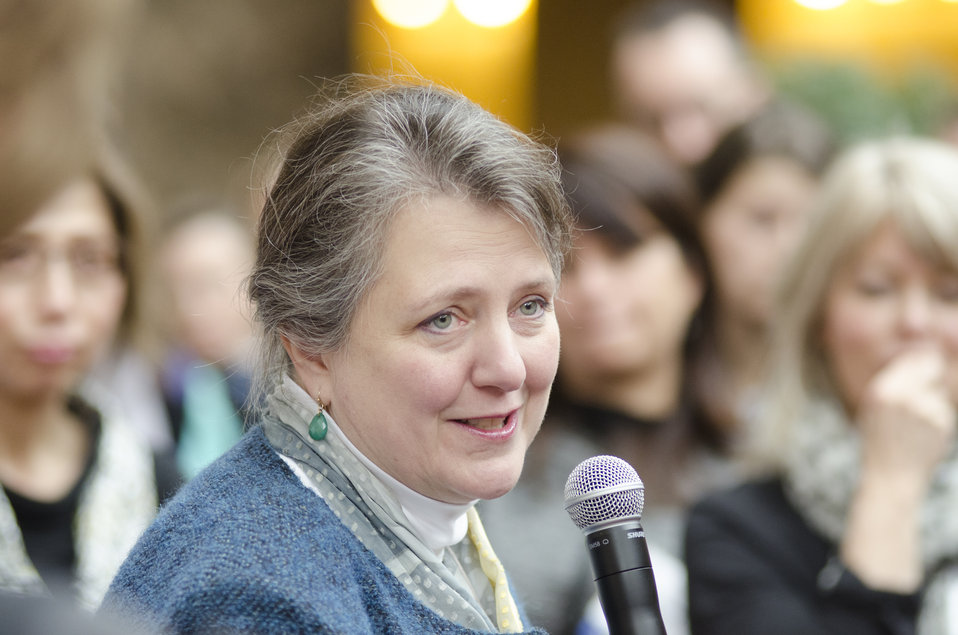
The U.S. Department of Agriculture (USDA) 2013 Agricultural Outlook Forum was held at the Crystal Gateway Marriott Hotel in Arlington, VA on Friday, Feb. 22, 2013. Agriculture Deputy Secretary Kathleen Merrigan participated in the Women in Agriculture-Speed Networking Event, which encouraged and promoted the participation of women in American agriculture.